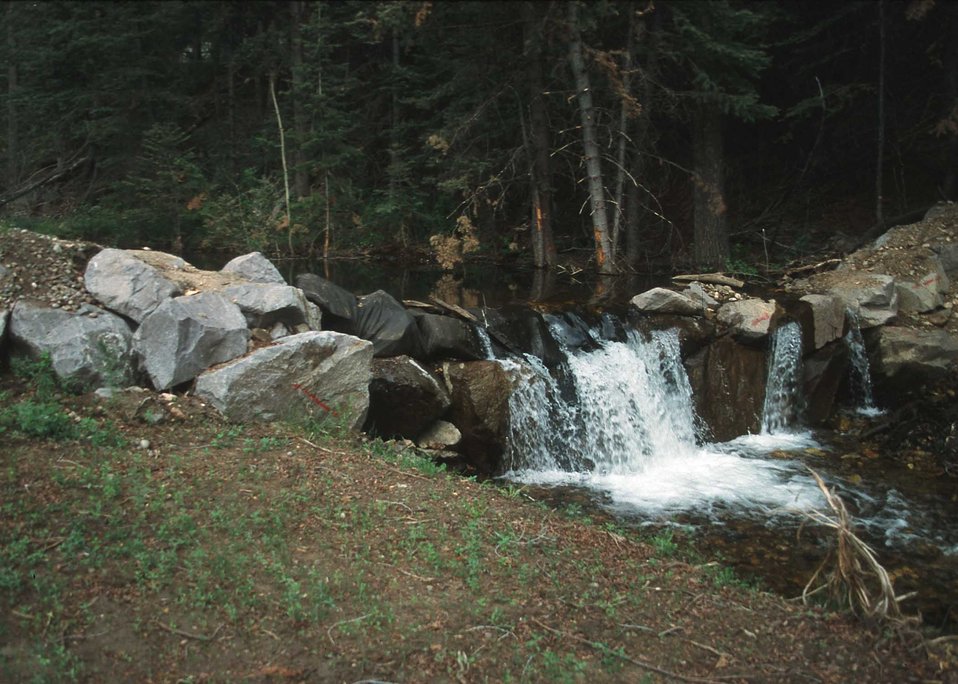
Fish Barrier on Trinchera Creek/FT-Ranch.